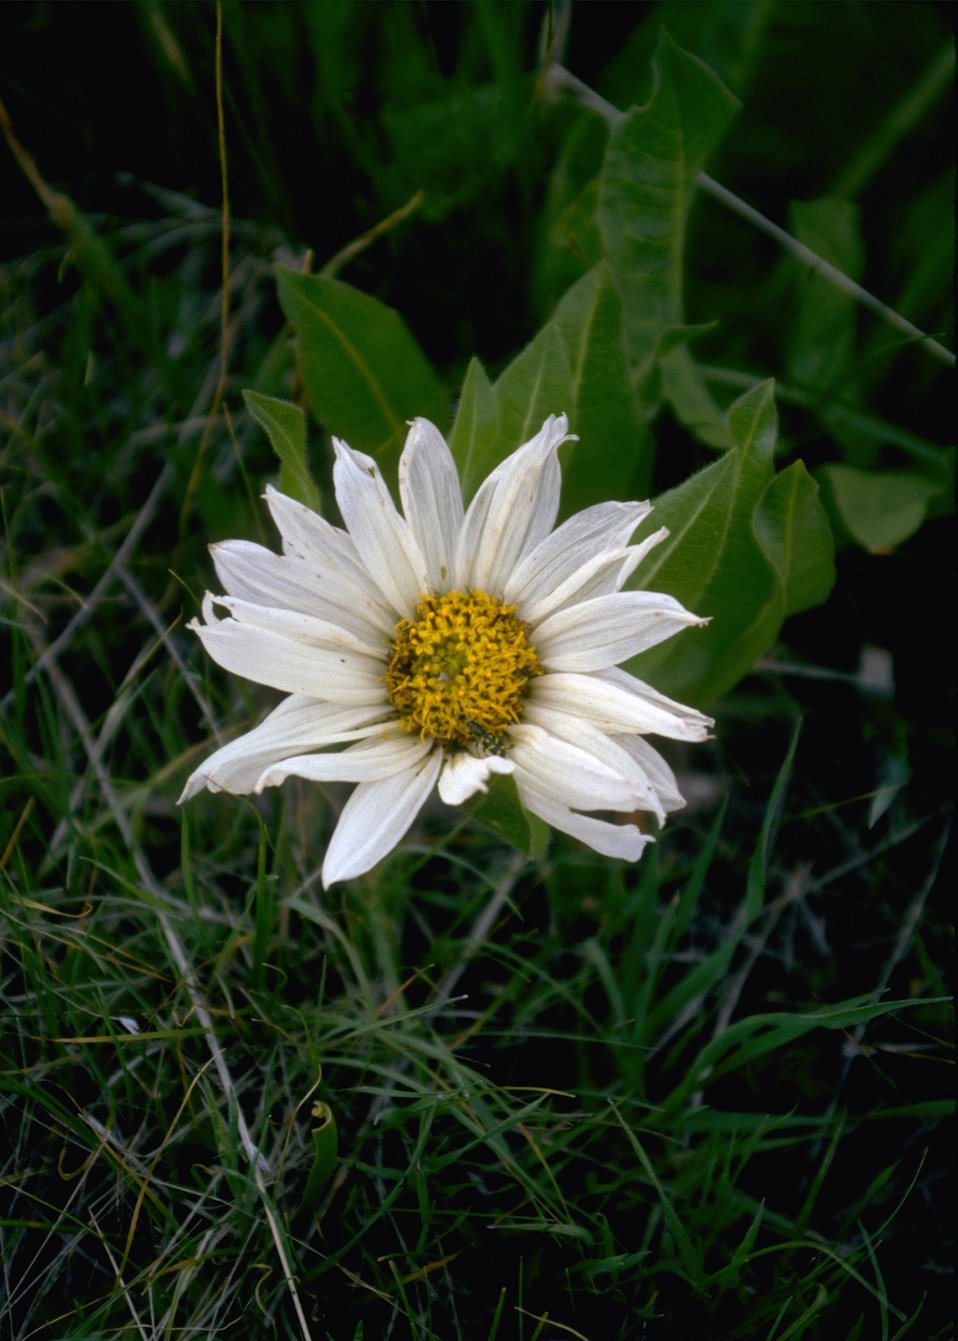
Mule's Ears (Wyethia helianthoides) near the Riddle Brother's ranch on Steens Mountain in Southeastern Oregon.